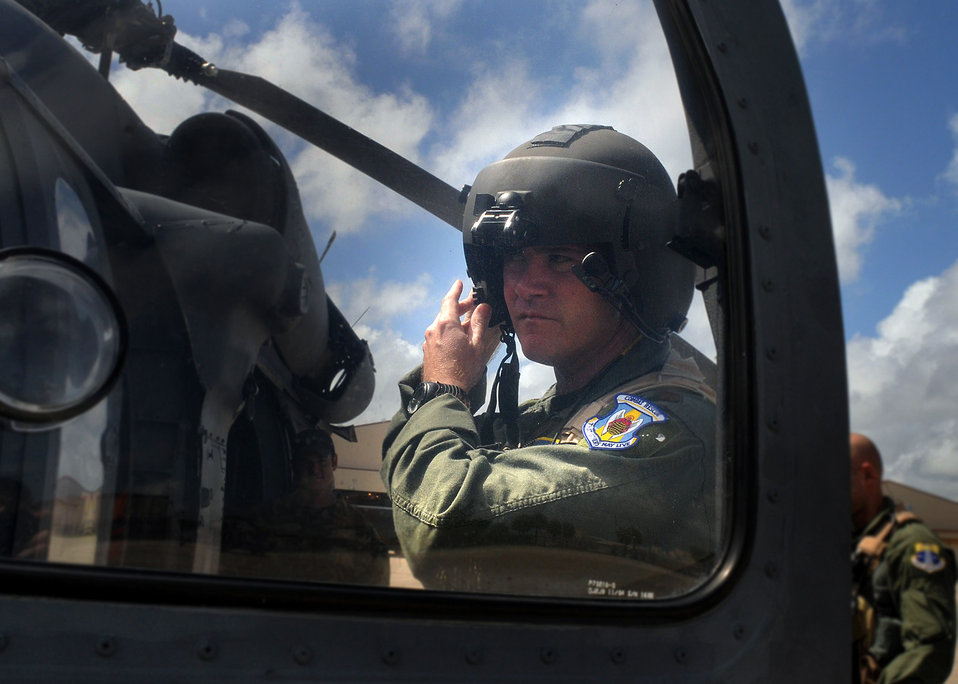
Patrick Airmen ready to help Hurricane Ike victims

An HH-60G Pave Hawk pilot with the 920th Rescue Wing here prepares to fly to the Gulf region Sept. 10 at Patrick Air Force Base, Fla. The pilot and a group of wing Airmen will stand ready to provide search and rescue support for those affected by Hurricane Ike.